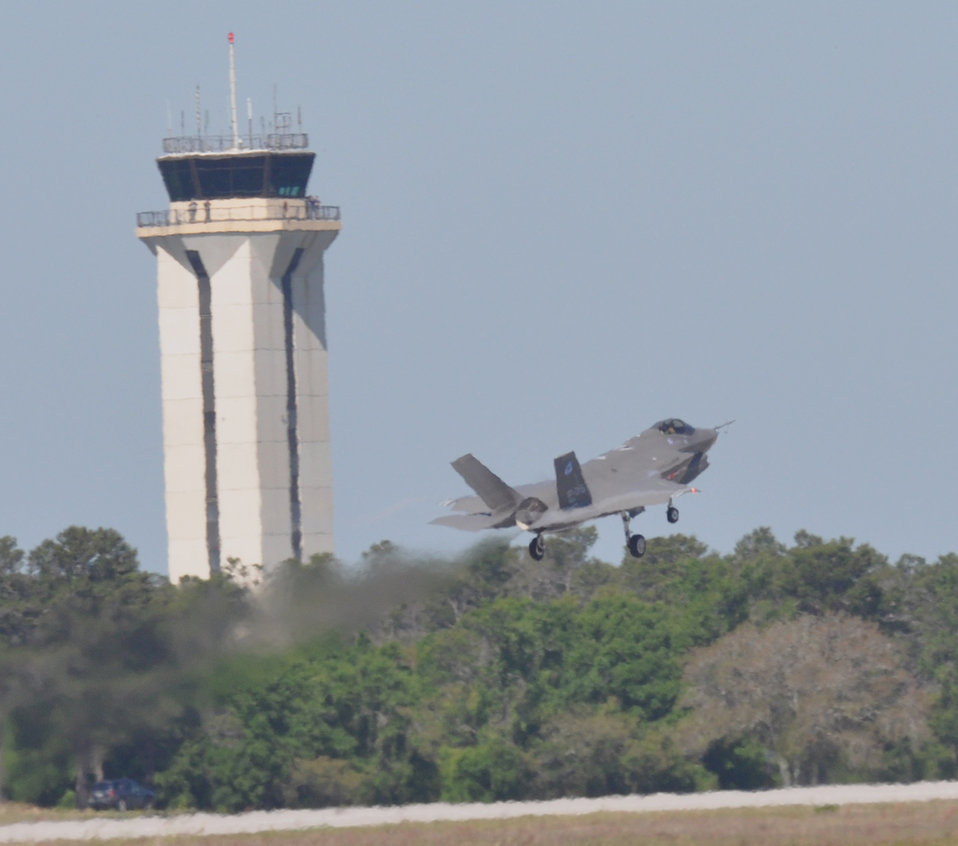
F-35 test plane flies over Eglin

The F-35 Lightning II Joint Strike Fighter test aircraft AA-1 performs a touch-and-go maneuver April 23 at Eglin Air Force Base, Fla. The aircraft's first arrival at the base was to provide a showcase to base Airmen and the local community.